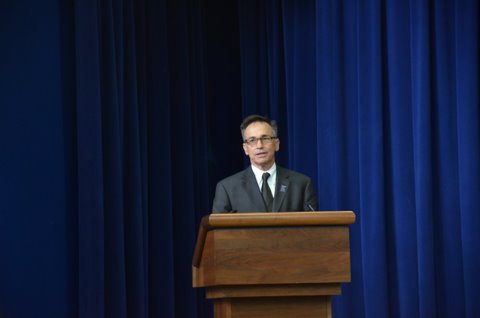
Dr. John Ward

WH 2012 World Hepatitis Day Event